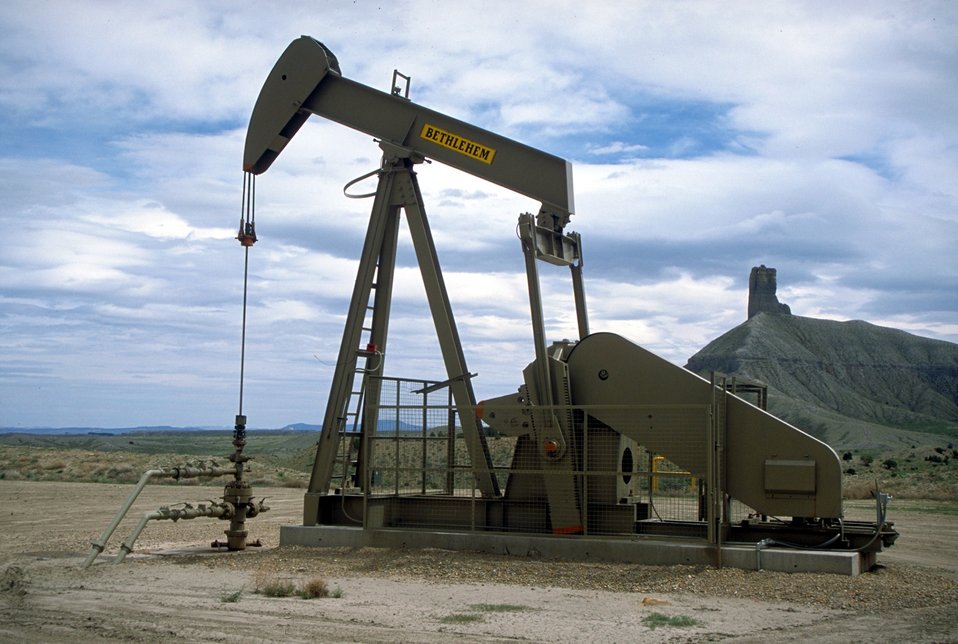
Pump unit producing coal bed methane near Price, Utah.